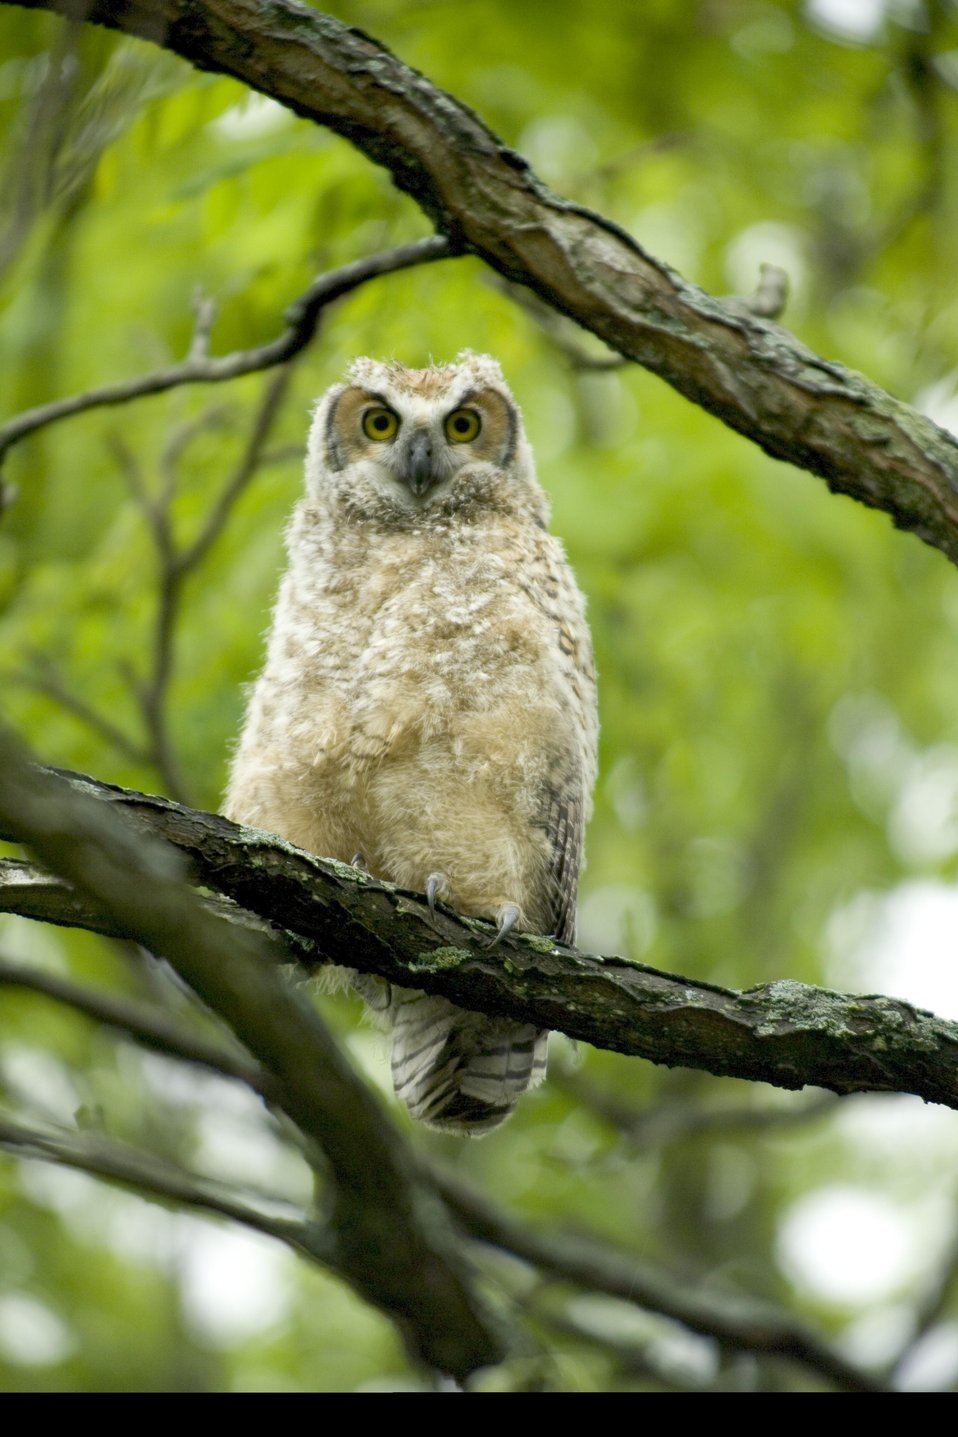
A BABY GREAT HORNED OWL ON THE SITE OF THE FERMI NATIONAL ACCELERATOR LABORATORY.

IN AN EFFORT TO RECOGNIZE AND PRESERVE ITS PRAIRIE HERITAGE, FERMILAB ENCOURAGES NATURAL PRAIRIE LIFE AND VEGETATION. THE FERMI NATIONAL ACCELERATOR LAB ADVANCES THE UNDERSTANDING OF THE FUNDAMENTAL NATURE OF MATTER AND ENERGY BY PROVIDING LEADERSHIP AND RESOURCES FOR QUALIFIED RESEARCHERS TO CONDUCT BASIC RESEARCH AT THE FRONTIERS OF HIGH ENERGY PHYSICS AND RELATED DISCIPLINES.